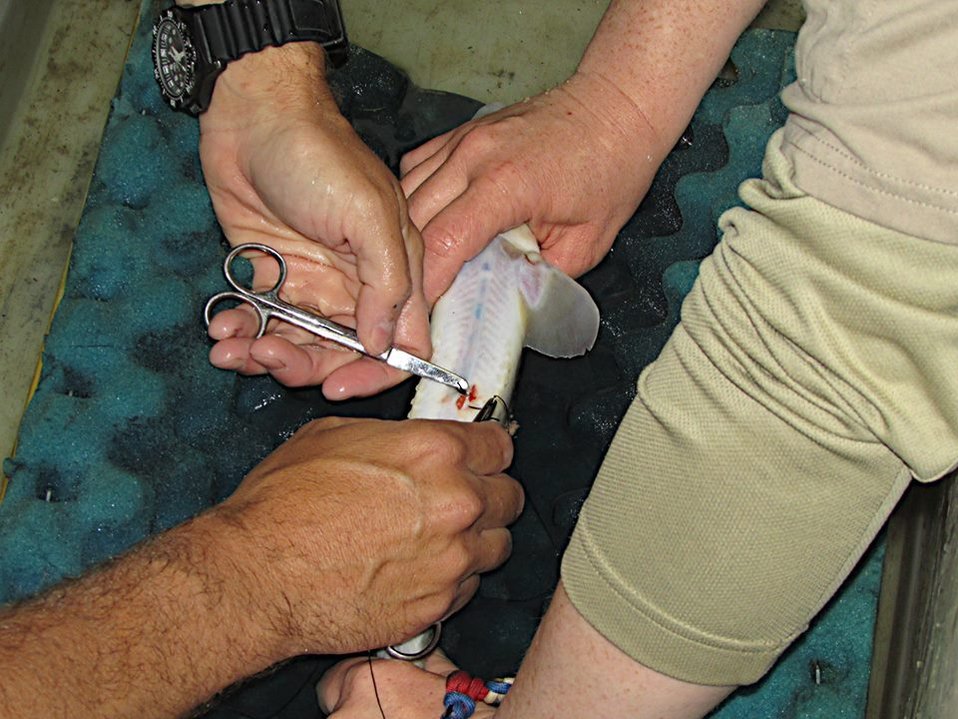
Fish Surgery

Last summer, we released pallid sturgeon implanted with sonic radio transmitters into the Missouri River. This was done as part of a catchability research project. The radio transmitters allowed biologists to locate the fish and attempt to recatch them, therefore helping evaluate the effectiveness of their sampling gear.

Here is one of the sturgeon receiving surgery before leaving the hatchery.